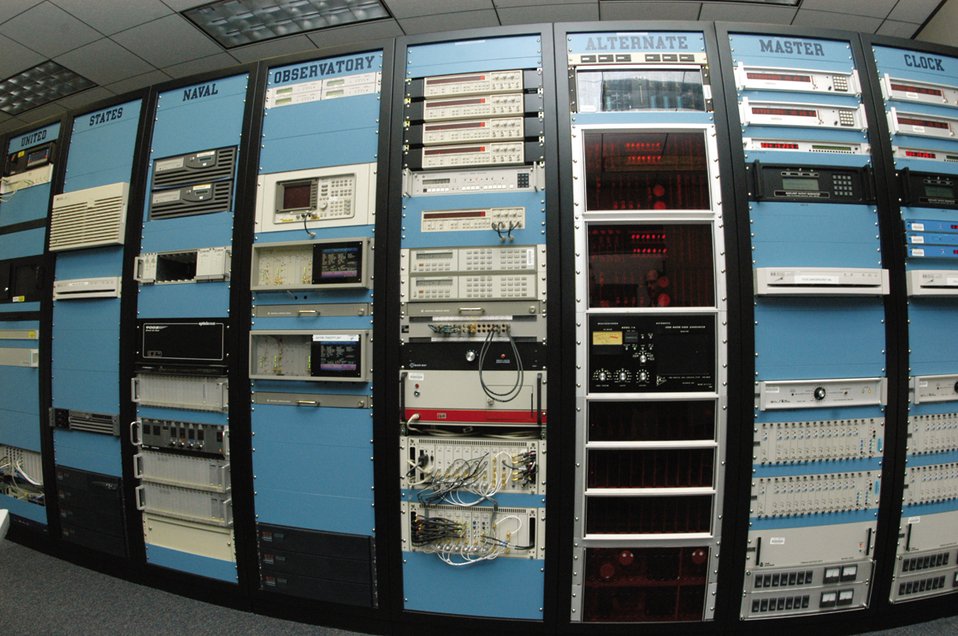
Leap second

SCHRIEVER AIR FORCE BASE, Colo. (AFPN) -- The U.S. Naval Observatory Alternate Master Clock, located at the 2nd Space Operations Squadron's operations center, is accurate to within one second every 20 million years. The clock showed 23:59:60 Saturday as the squadron and USNO added the first leap second in seven years.